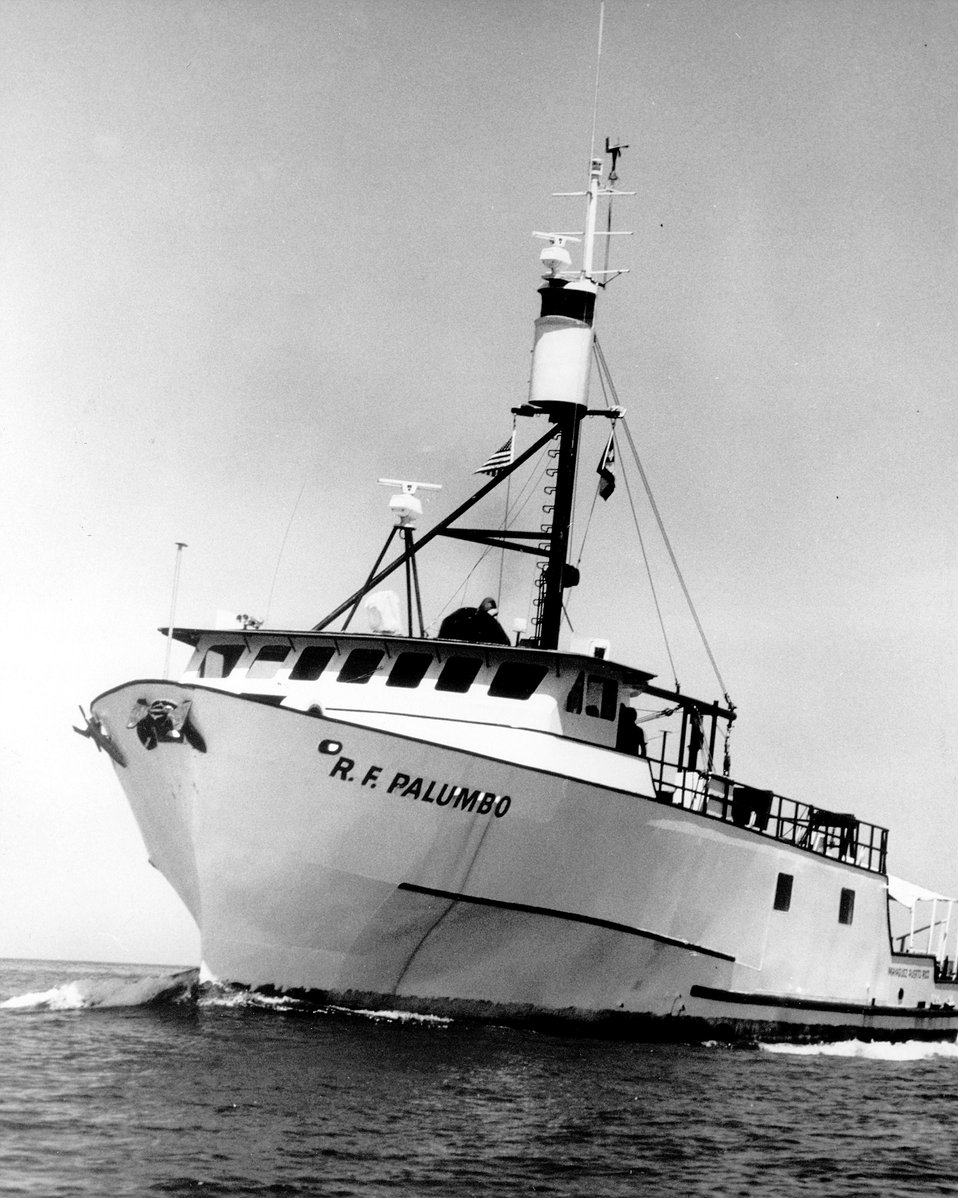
The U.S. Atomic energy Commission's research vessel, R.F. Palumbo has been in service since 1971. Circa 1972.